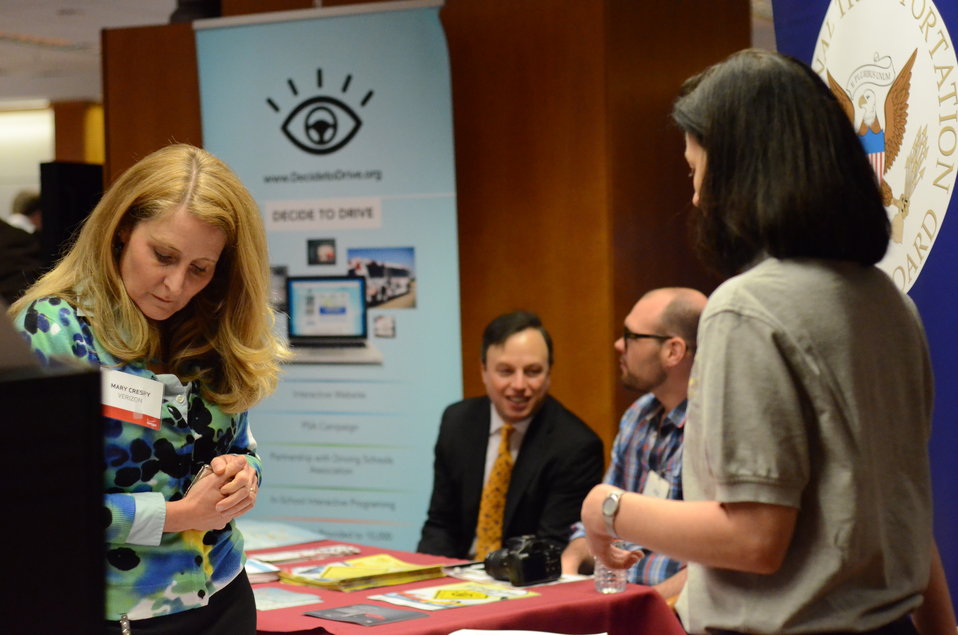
Distracted Driving Technology Showcase April 19, 2013